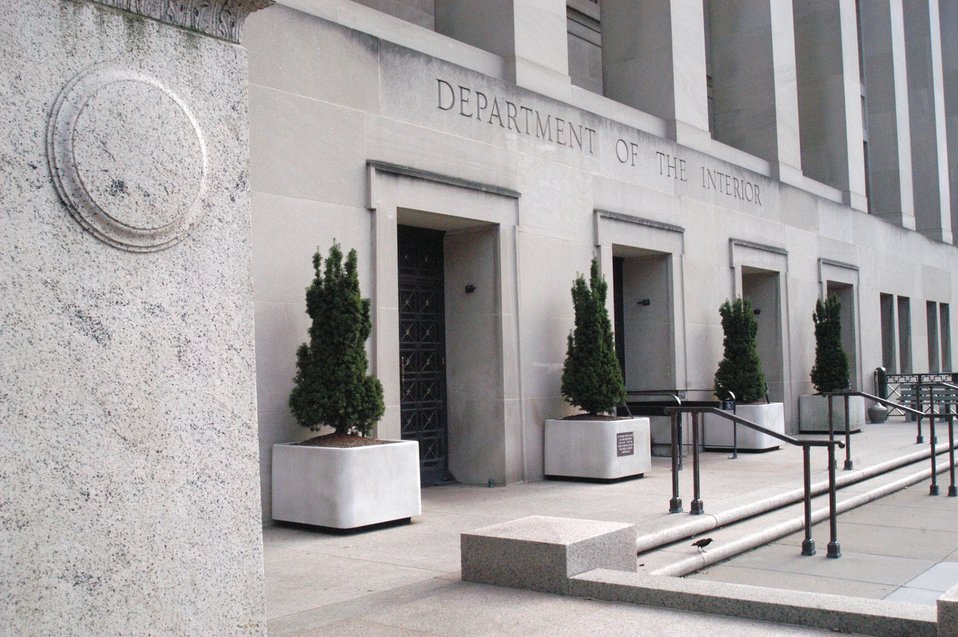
Department of the Interior building in Washington DC on 1849 C Street N.W. Photo by Tom Iraci, July 2004.